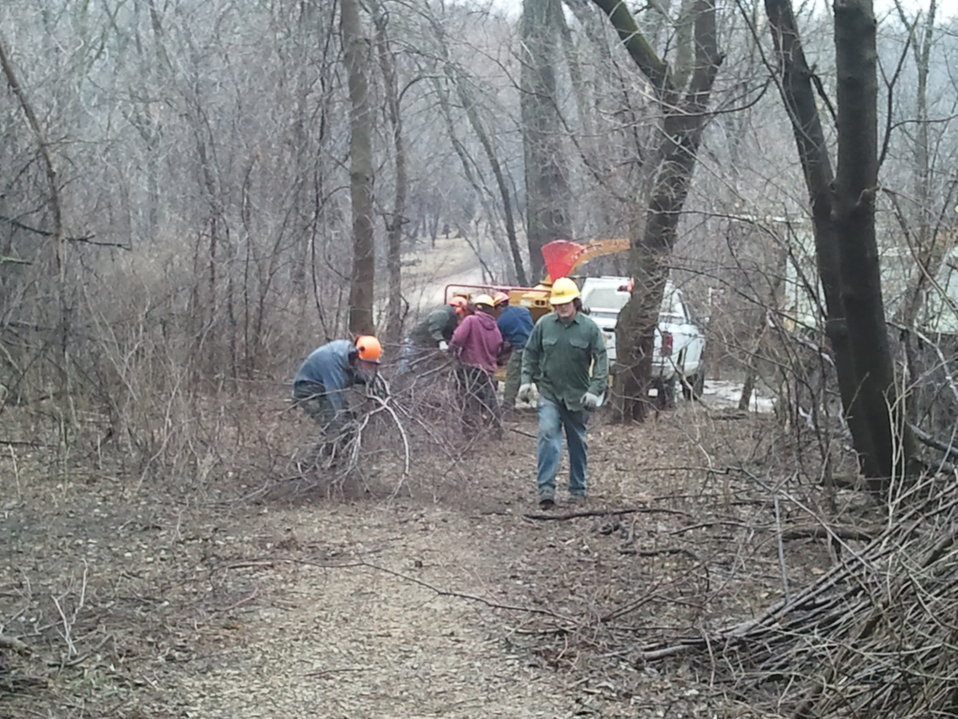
The Makings of Biofuel

The woody debris was chipped and used as biofuel for District Energy in St.Paul.